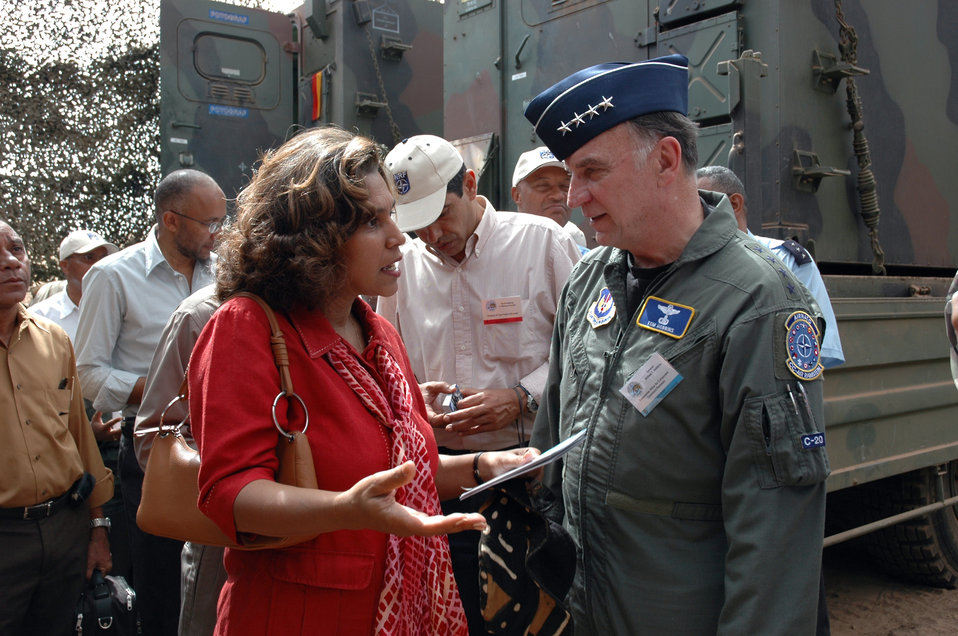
NATO troops exercise at Steadfast Jaguar

Gen. William T. Hobbins talks with Cristina Fontes Lima, Cape Verde Defense Minister, during a distinguished visitor day for Exercise Steadfast Jaguar in Sao Vicente, Cape Verde, on Friday, June 23. More than 7,000 NATO servicemembers from land, maritime and air components are participating in the exercise, which ends today. General Hobbins is the commander of U.S. Air Forces Europe, and Air Component Command Ramstein, as well as director of the Joint Air Power Competency Center at Ramstein Air Base, Germany.